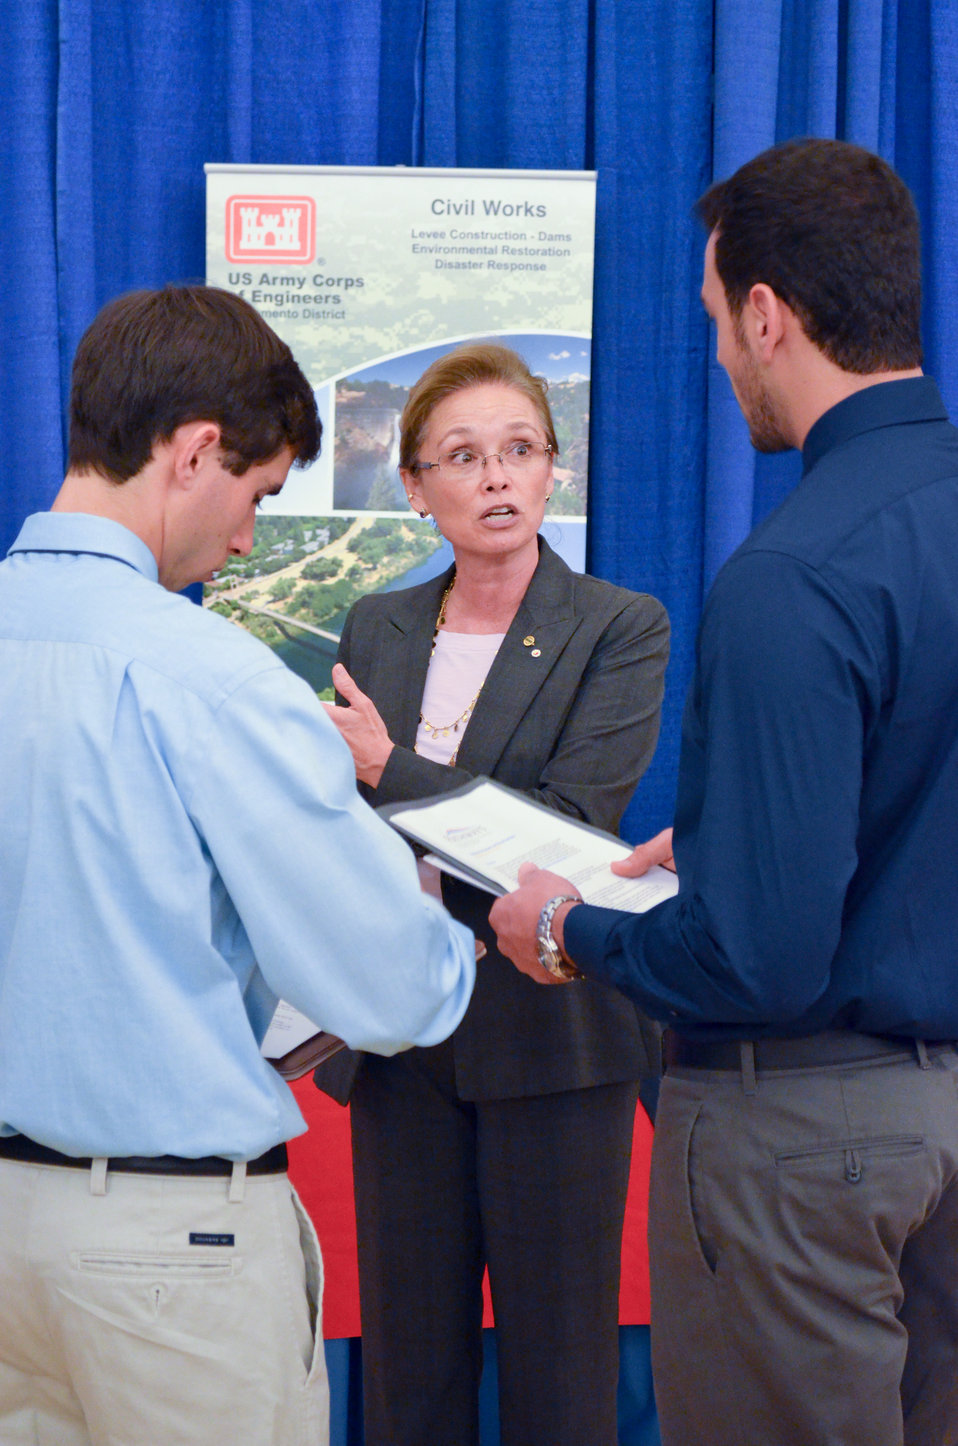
District leaders discuss career, internship opportunities at UC Davis Night with Industry

U.S. Army Corps of Engineers Sacramento District’s commander Col. Bill Leady and Linda Finley, programs and project support branch chief, speak to attendees at Night with Industry 2012, a networking event at the University of California – Davis in Davis, Calif., Nov. 1, 2012. The event allowed engineering students to discuss career and internship opportunities with industry leaders.